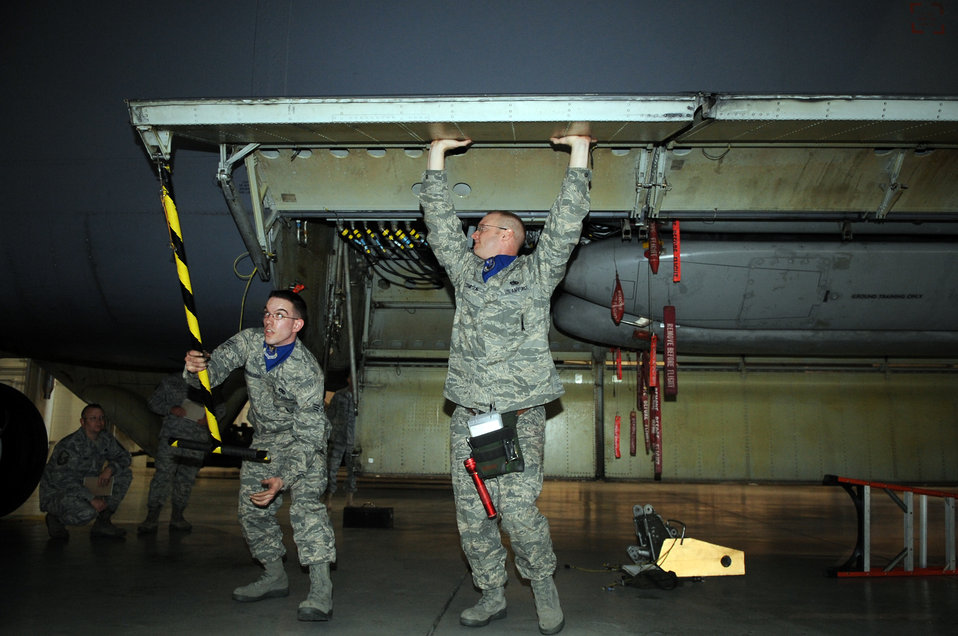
Global Strike Challenge load competition at Minot

Tech. Sgt. Brenton Sampson and Senior Airmen John Bumbalough, participate in a load crew completion April 13, 2010, at Minot Air Force Base, N.D. Sergeant Sampson and Airman Bumbalough are 5th Aircraft Maintenance Squadron load crew members.